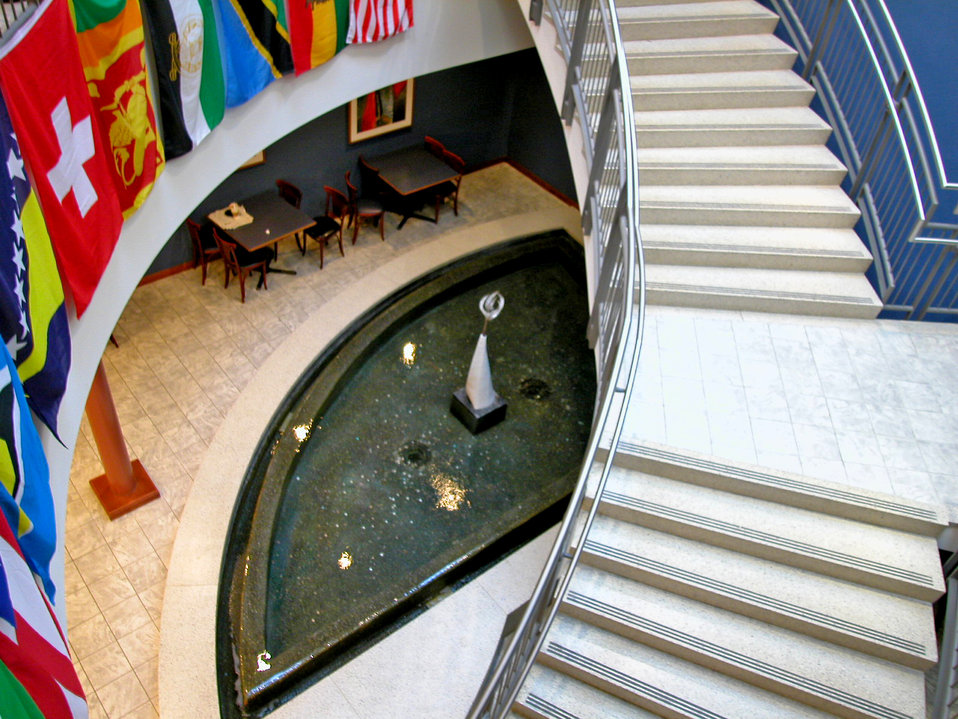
This 1998 photograph depicted a publicly-accessible staircase, which had been designed with consideration for those that were visually-impaired. Note that the underside aspect of this structure had been cordoned off by the inclusion of a fountain-pool, and seating area, in order to prevent the visually-impaired from walking beneath the low-hanging staircase, thereby, avoiding head or bodily injuries. In this way, normally unused, though potentially dangerous walk-through space, was turned into an attractive, and safe amenity. Note also, that the handrail was 'double-height' on both its sides, as well as provided an additional offset-located center handrail stanchion, thereby, providing safe use by short and tall people. The relatively narrow horizontal spacing between handrails on one side, allowed users to hold onto both handrails at the same time, thereby, achieving greater stability. See PHIL# 9047, and 9048 for additional views of this structure.